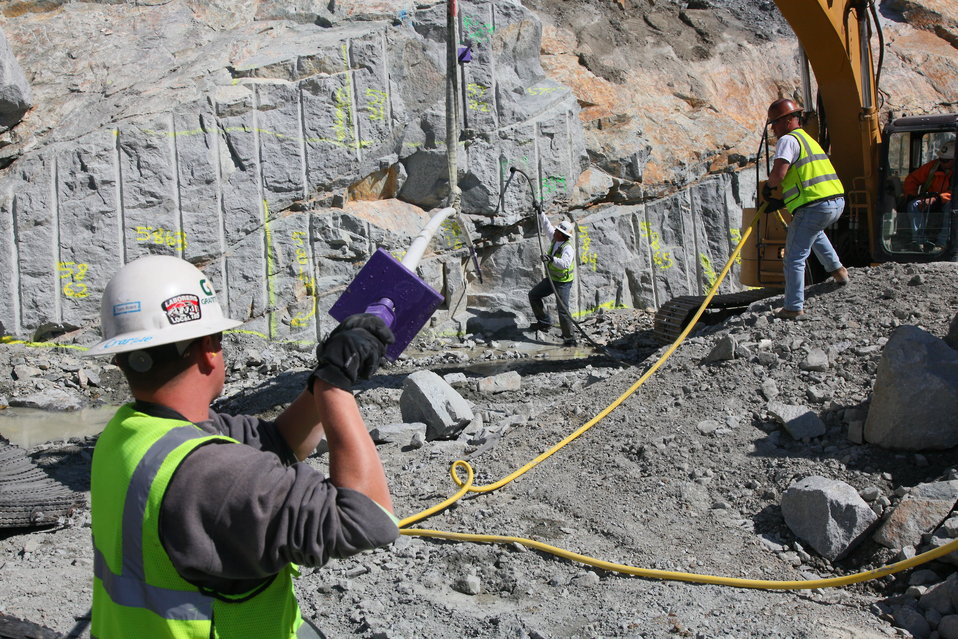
Installing rock securing bolts at the Folsom Dam auxiliary spillway

Contractors for the U.S. Army Corps of Engineers Sacramento District install a slurry mix and bolts to secure rock walls at the excavation site for the Folsom Dam auxiliary spillway in Folsom, Calif., April 5, 2012. Geologists determine placement of drilled holes to secure the upstream rock wall of the spillway. The spillway, scheduled to be ready for use in 2017, will allow Folsom Dam to release water sooner and more safely. The project is part of the Folsom Dam Joint Federal Project, a joint effort of the Sacramento District, the U.S. Bureau of Reclamation, the Central Valley Flood Protection Board and the Sacramento Area Flood Control Agency to improve the safety of the dam and reduce flood risk for the greater Sacramento area.